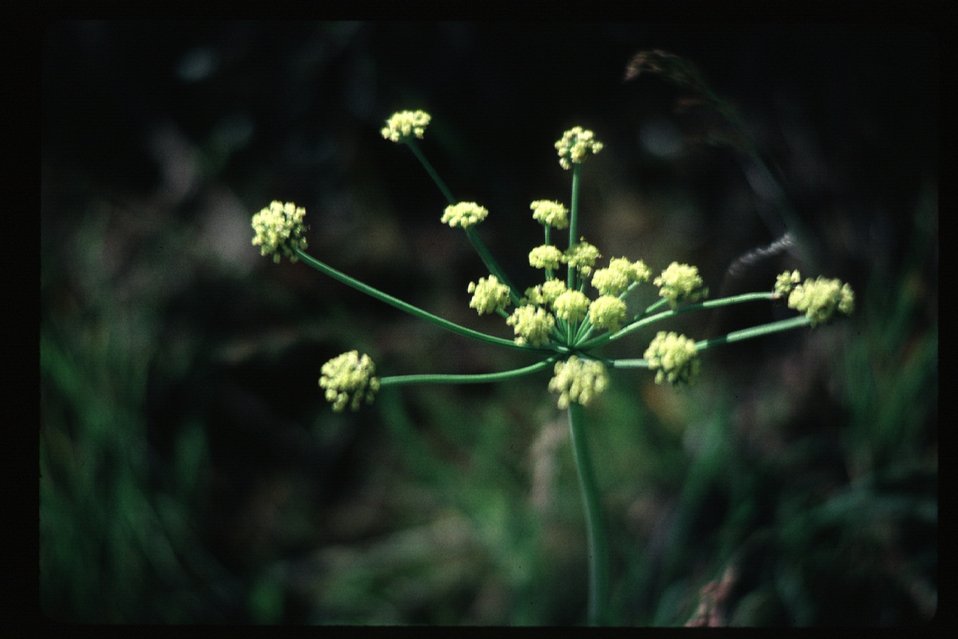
Lomation Biscuit Root Scenic Wildflowers Vegetation Grass and brush USRD Upper Snake River District